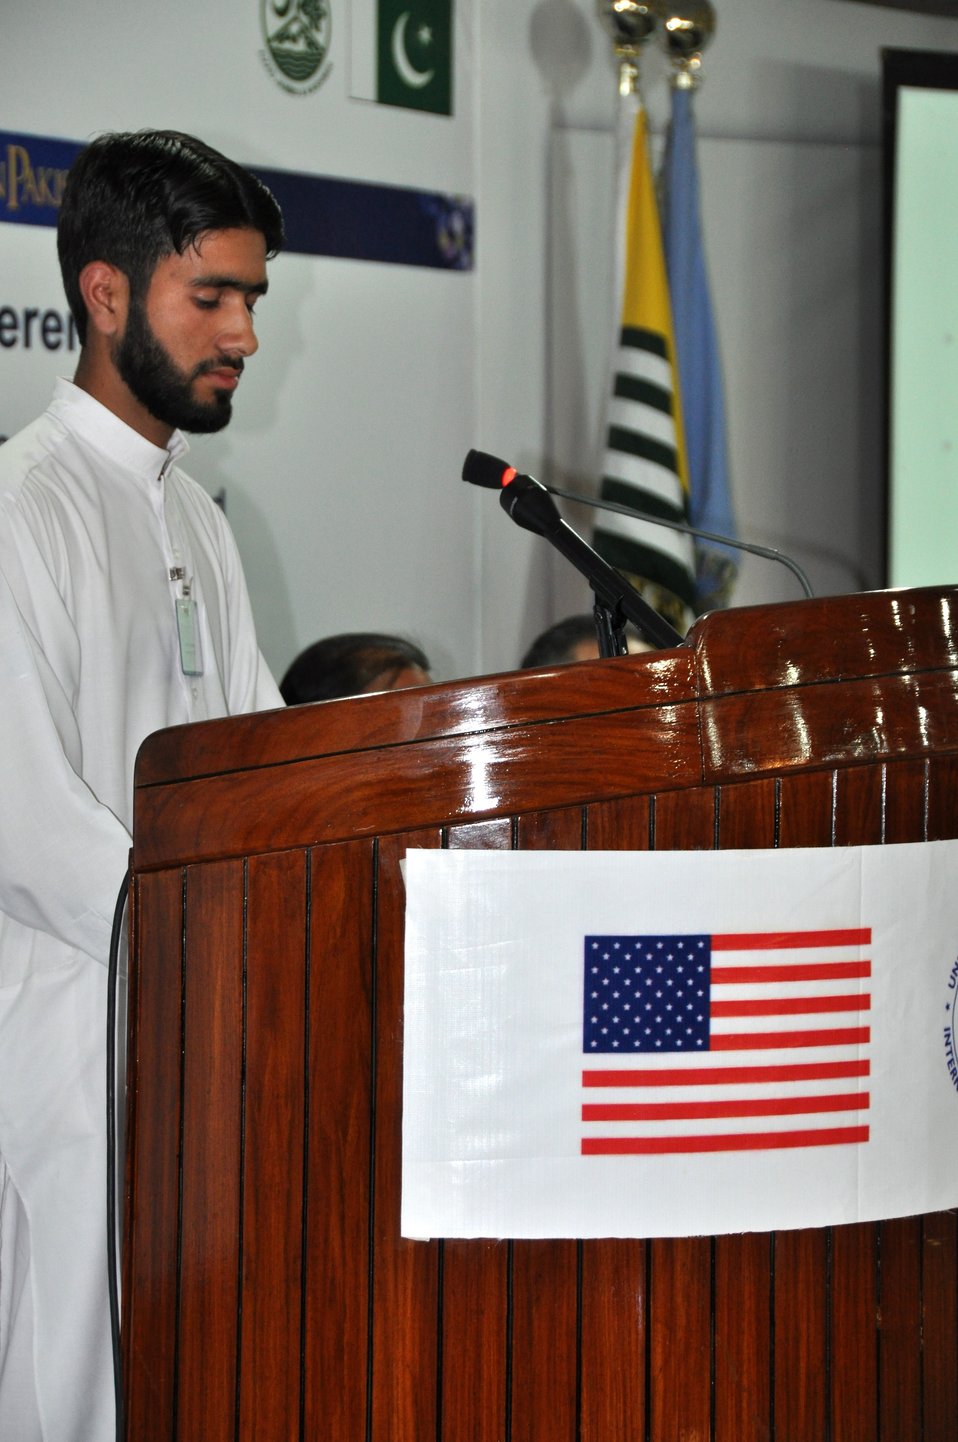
The United States Ambassador to Pakistan, Richard Olson broke ground for a U.S. funded construction of a new Faculty of Education building in Muzaffarabad, AJK. 05